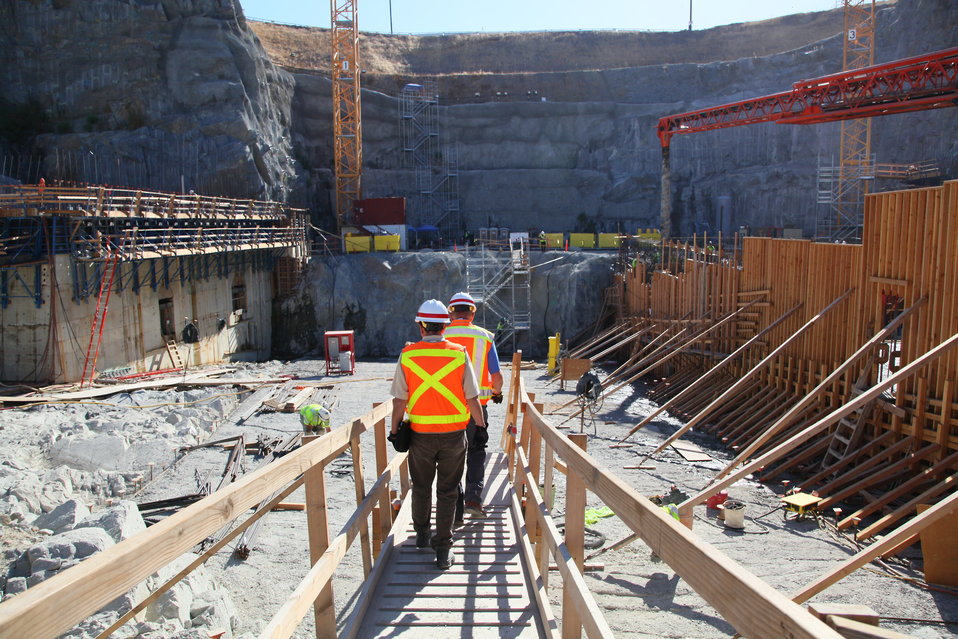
Safety a priority at Folsom Dam project

Wearing personal protective equipment, employees for the U.S. Army Corps of Engineers Sacramento District safely navigate the construction zone at the auxiliary spillway using walkways and scaffolding at the Folsom Dam in Folsom, Calif., Sept. 19, 2012. Safety at the job site is a number one priority; equipment and personal safety are a requirement. The Sacramento District is building the spillway in cooperation with the U.S. Bureau of Reclamation, the Central Valley Flood Protection Board, and the Sacramento Area Flood Control Agency to improve the safety of the existing dam and reduce flood risk for the greater Sacramento area.